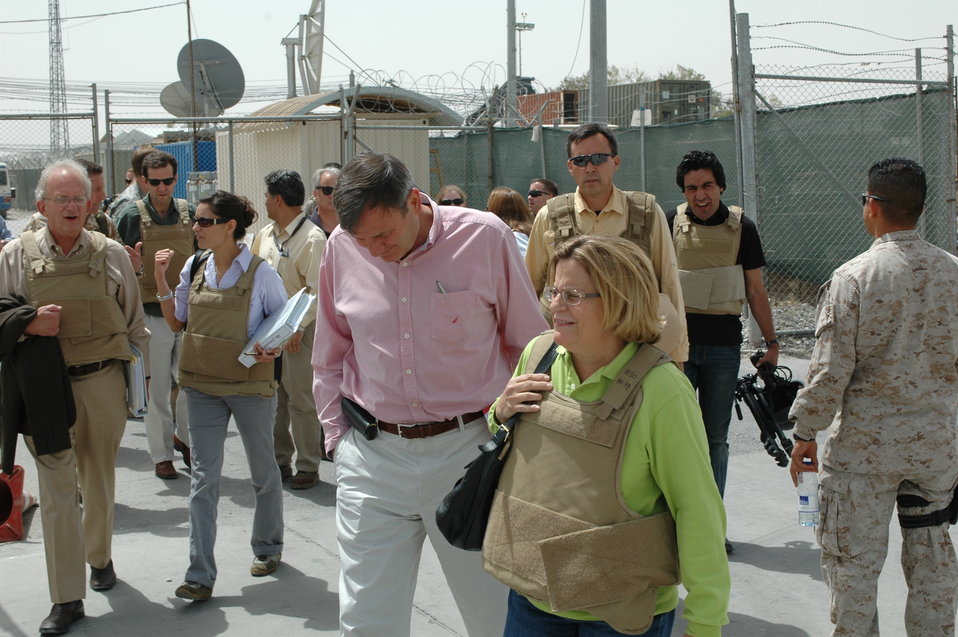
CODEL Berman